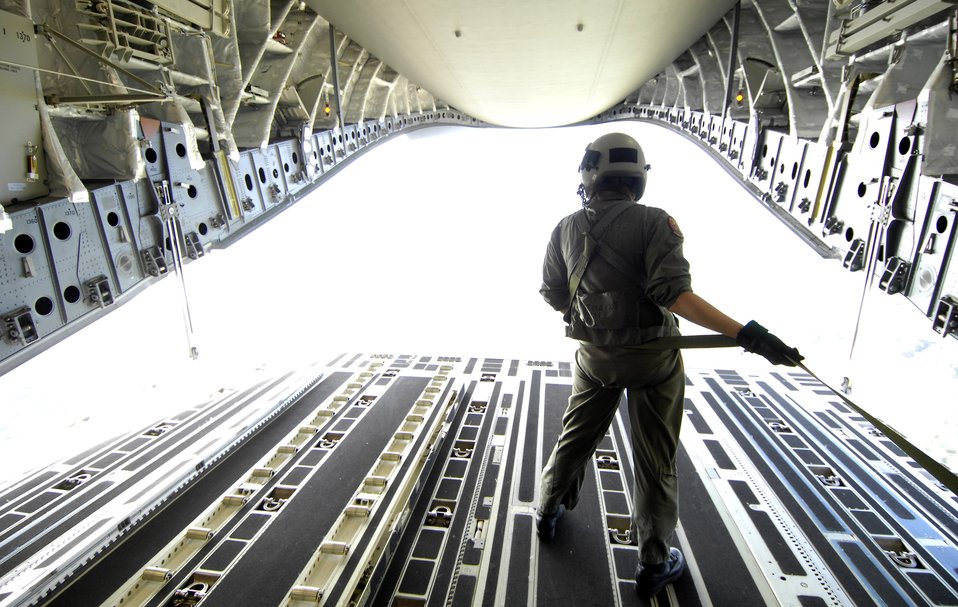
Airlift training

Capt. Stephanie Boff looks out the back of a C-17 Globemaster III during an airdrop training mission July 16 over Hawaii. Captain Boff is a pilot with the 535th Airlift Squadron at Hickam Air Force Base, Hawaii.